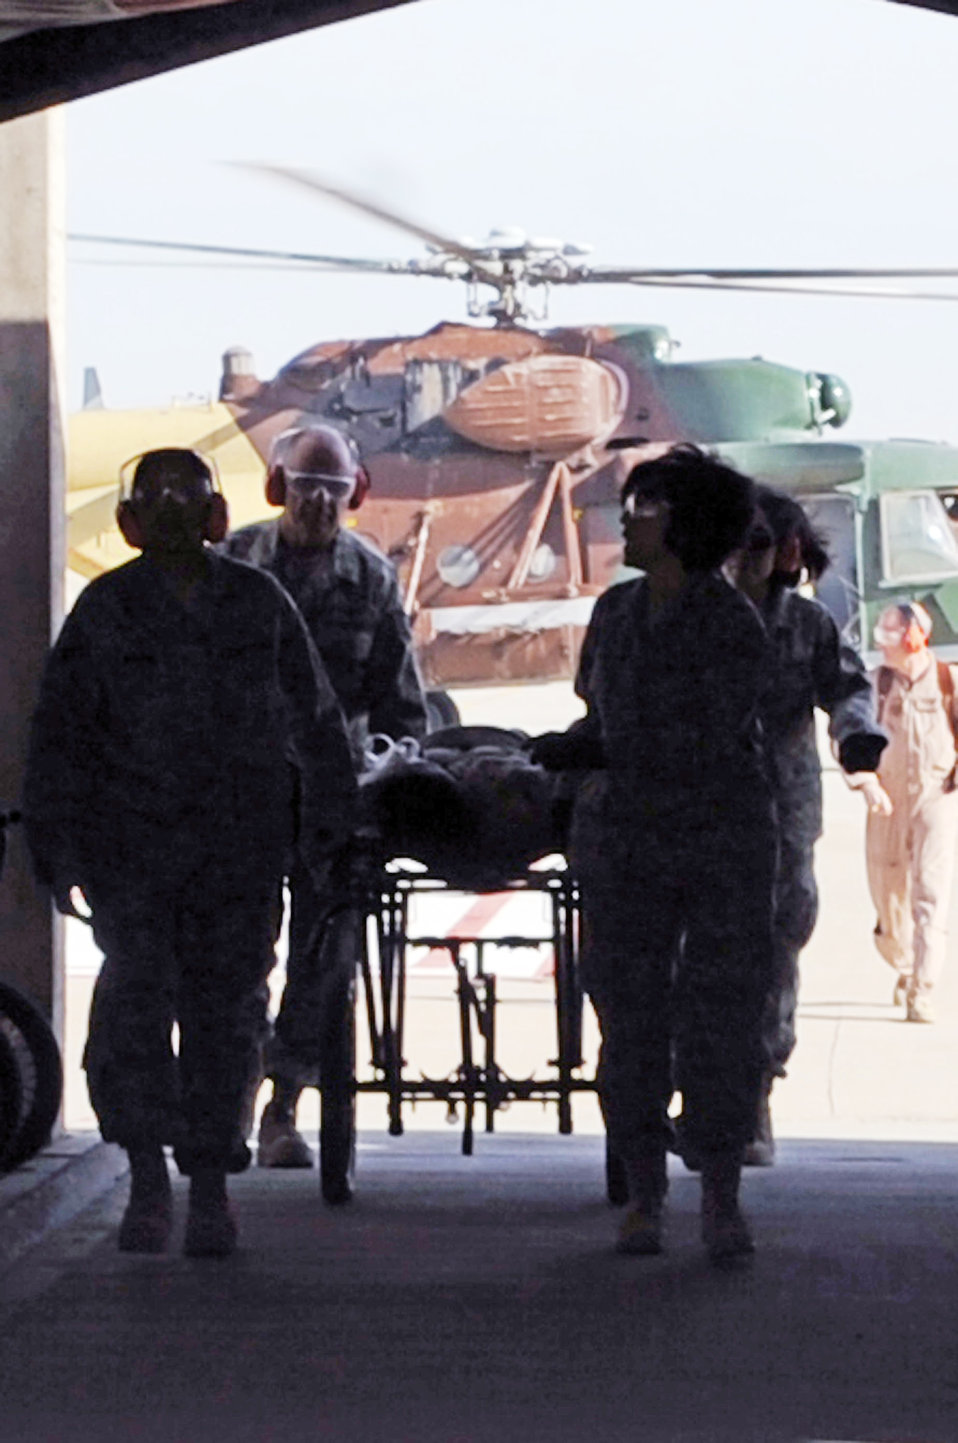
Air Force medics partner with Iraqi Ministry of Defense hospital

Airmen from the 332nd Expeditionary Medical Group transport a mock patient from an Iraqi helicopter during medical evacuation training for the Iraqi air force Dec. 21, 2009, at Joint Base Balad, Iraq. The purpose of the training is to help Ministry of Defense officials strengthen their health care system for Iraqi troops.